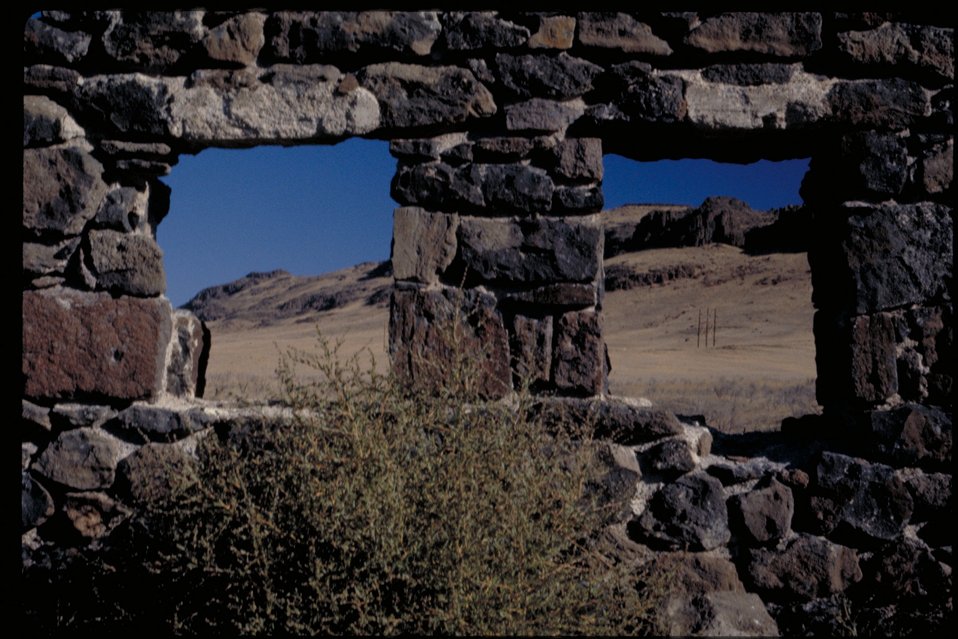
Oregon Trail Hot Springs near Teapot Dome Lower Snake River District